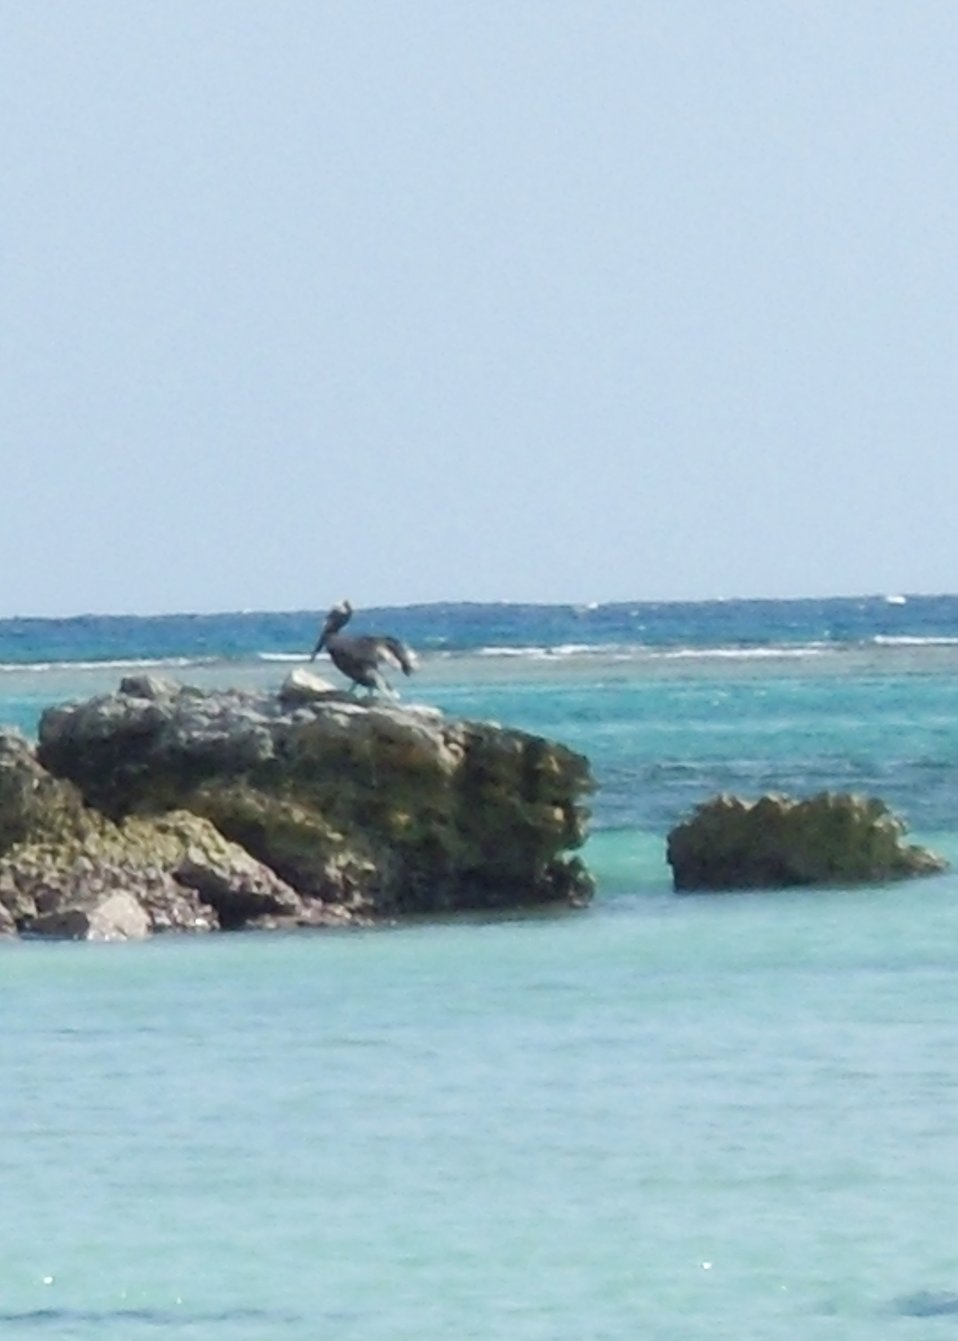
American brown pelican

On Great Inagua Island.